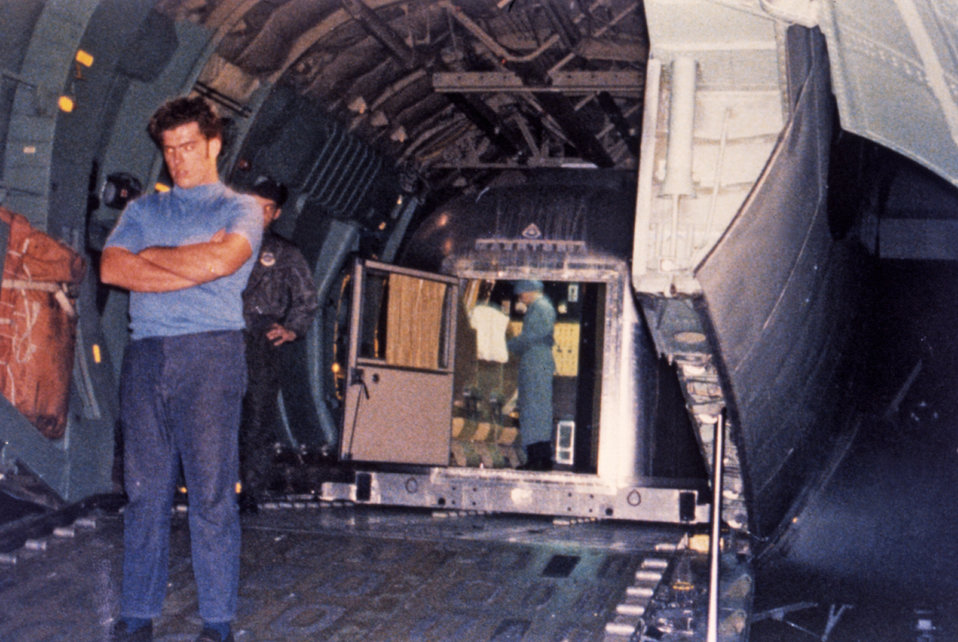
This photograph shows airport attendants at the rear of a plane at Waterloof military airport in Pretoria, South Africa, during the medical evacuation of a suspected Ebola patient in 1976.